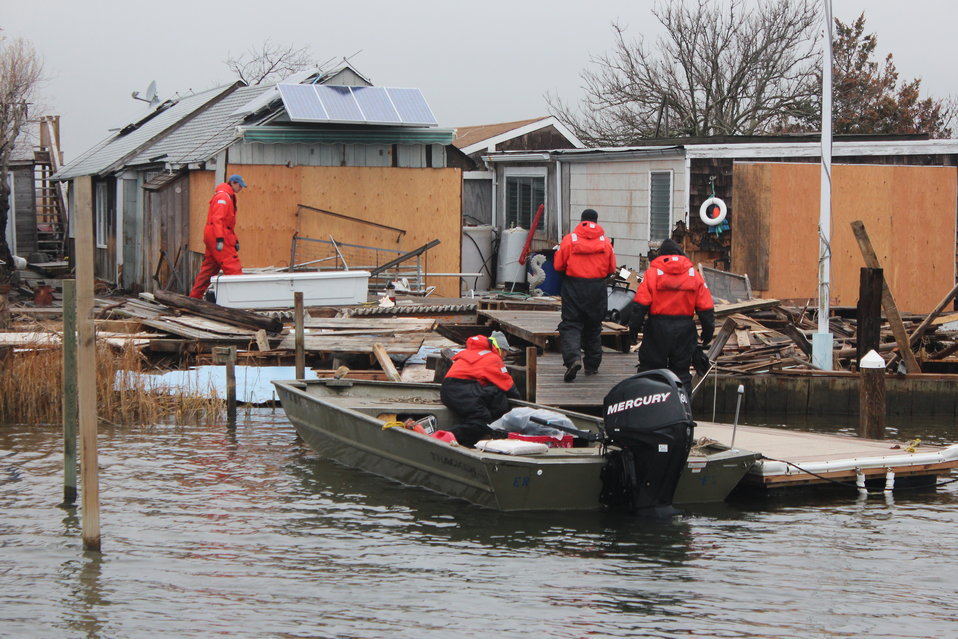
December 8, 2012 Small boat lands first, begins the search along Whig Inlet

Having a crew in the smaller boat was more efficient. They could get to an area more quickly, search and gather hazardous items and move on to the next spot while a crew on a larger, flat bed boat came along and loaded what they found.

During the first week of December, EPA sent out multiple crews to search for and remove potentially hazardous containers within Jamaica Bay and the western end of Great South Bay, Long Island, New York.